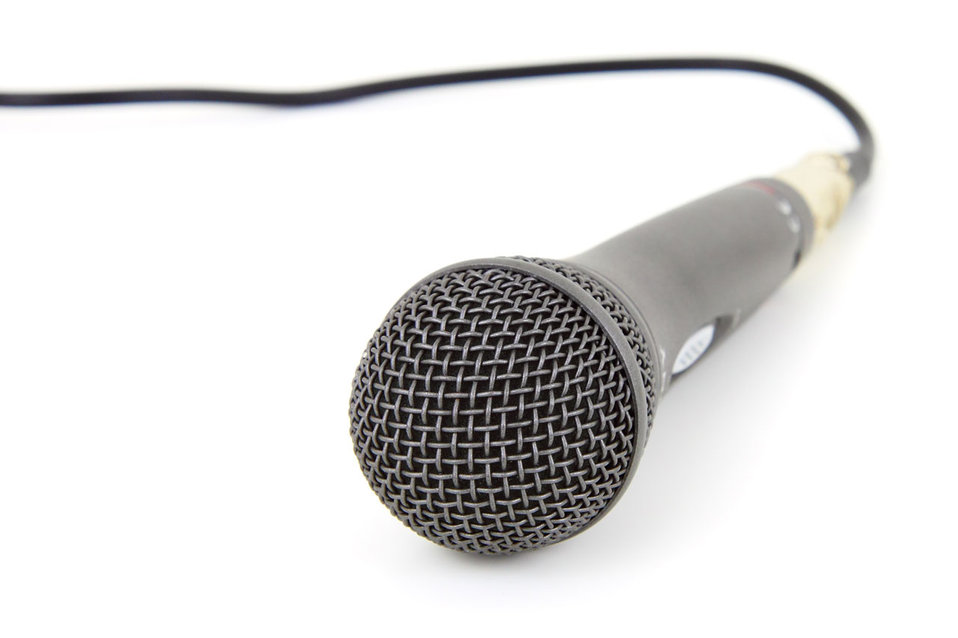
Studio microphone isolated on white background.